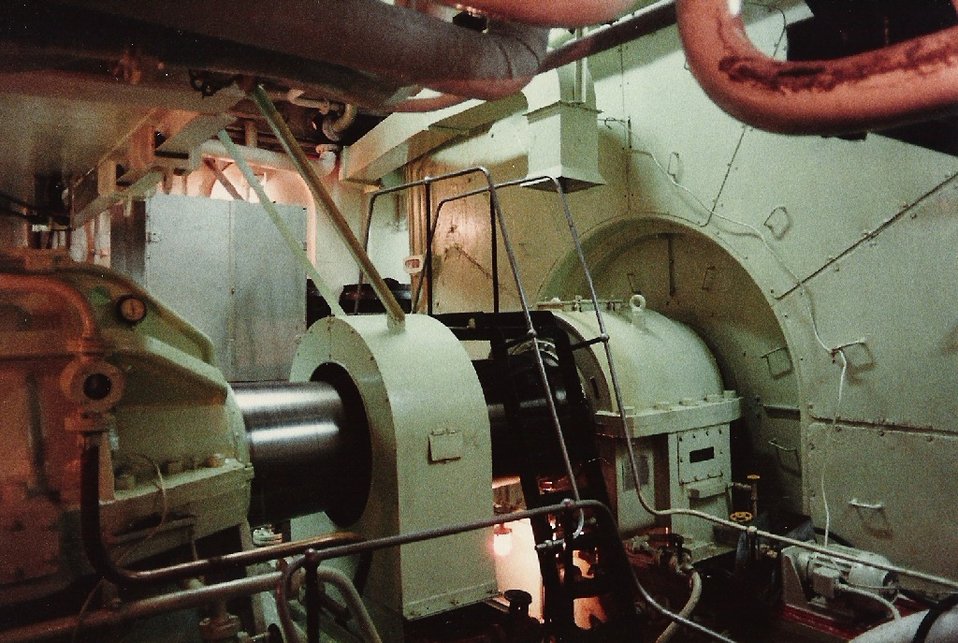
Port main propulsion motor, ss Canberra. Photo taken by Paul Dashwood 1984